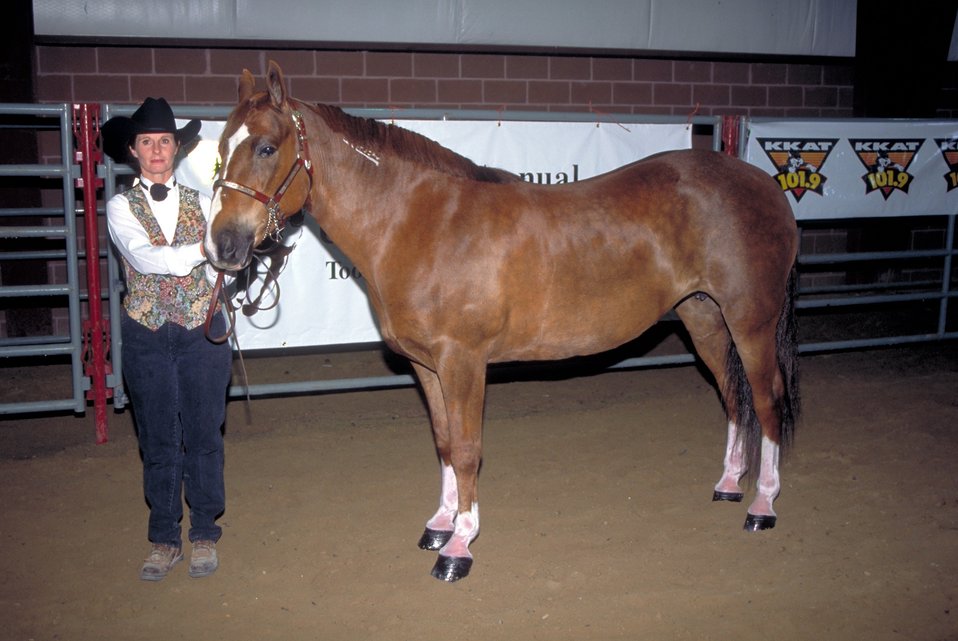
Utah Annual Wild Horse Festival.